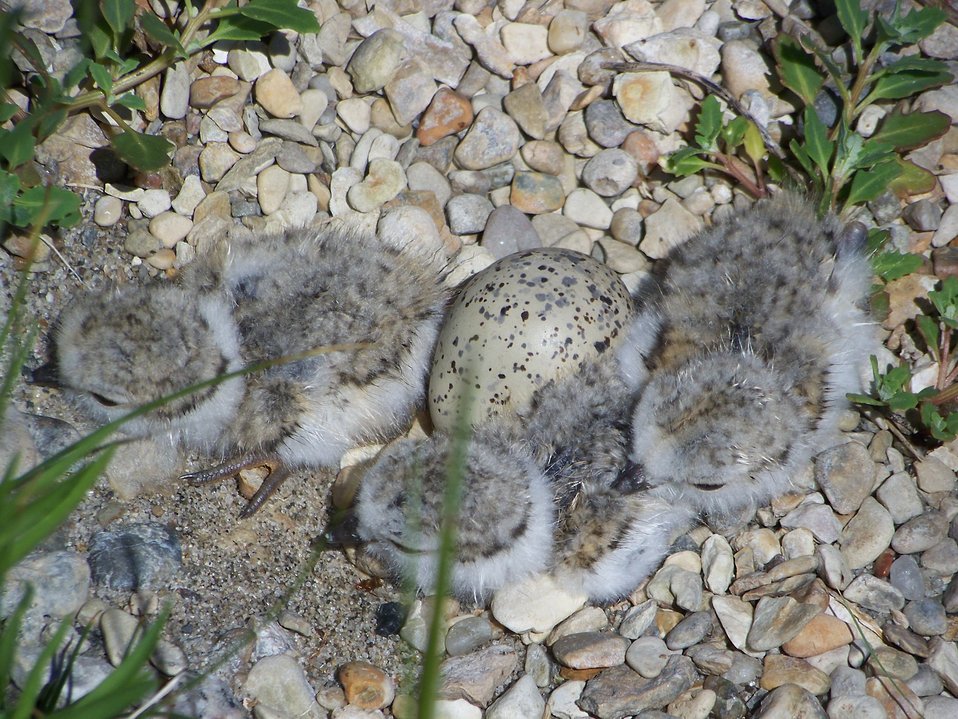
Piping plover chicks

Piping plover (Charadrius melodus) chicks and egg. The piping plover is a small, sandy-colored bird with orange legs, a black band across its forehead and a black ring around the base of its neck. The piping plover is designated as threatened under the Endangered Species Act. Plover numbers have declined due to habitat loss and disturbance, which lead to poor reproductive success.